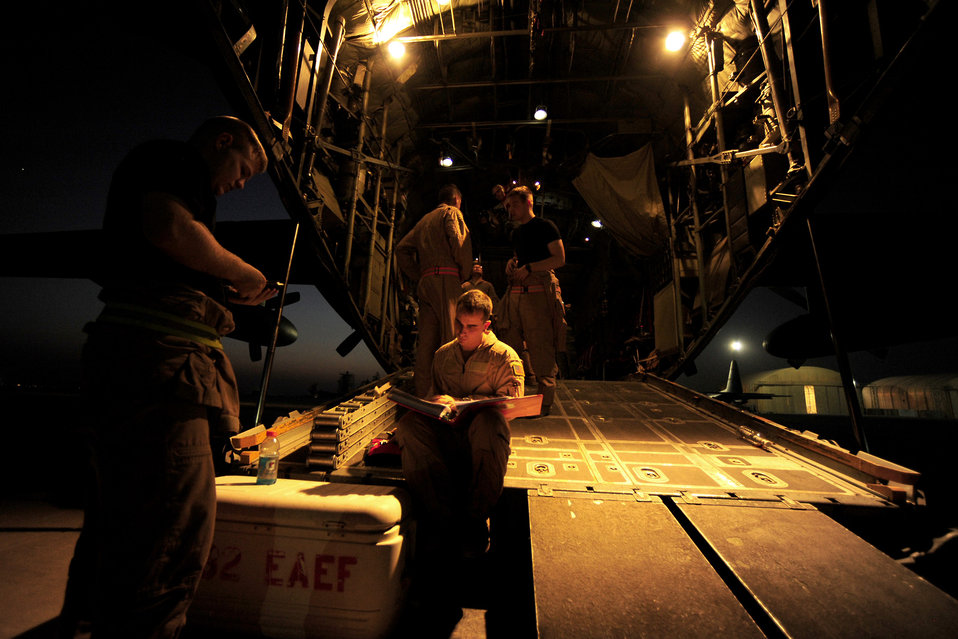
Medical crew

A loadmaster assigned to the 777th Expeditionary Airlift Squadron reviews a per-flight inspection checklist prior to an aeromedical evacuation mission July 17, 2010, at Joint Base Balad, Iraq.